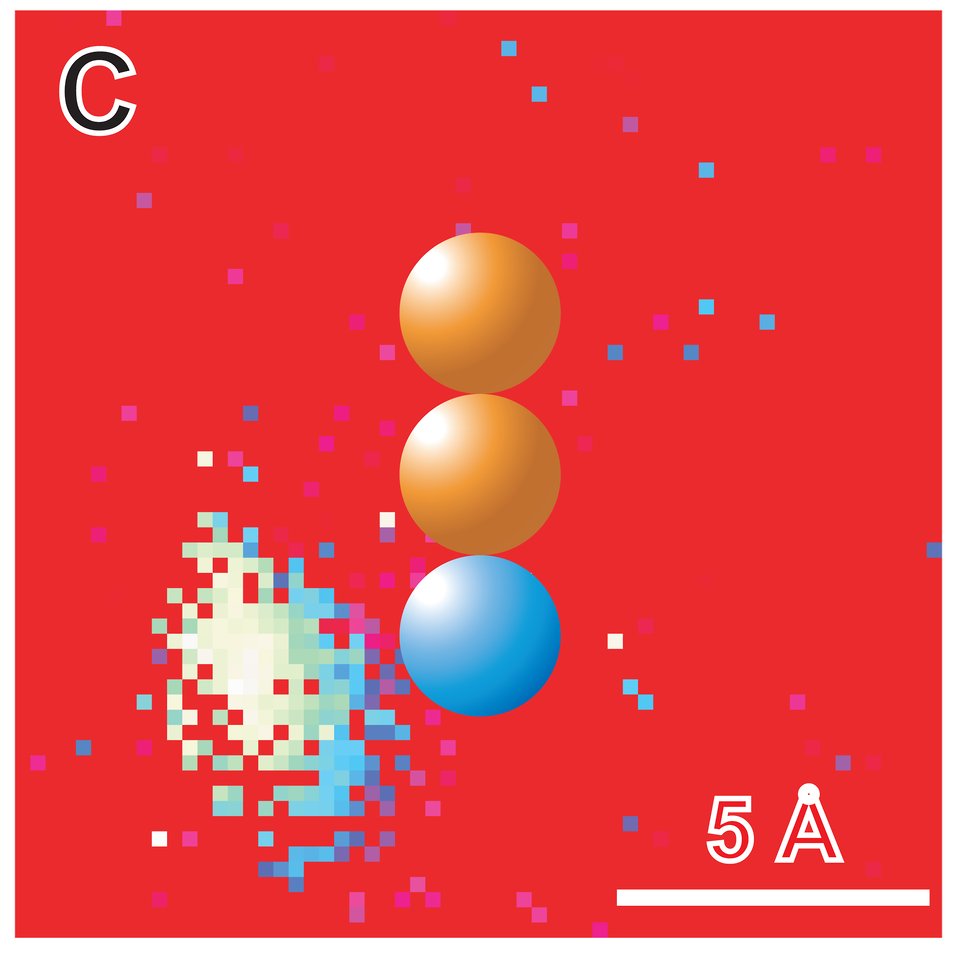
Atomic Switch Figure C

Based on measurements of the 'noise' made by the molecule at each pixel of a topographical image made with the STM, the researchers made a computer-generated spatial map of the atom switching speed and probability, showing that switching is most likely when the STM tip is positioned to the left of the cobalt atom (blue and white speckled area).